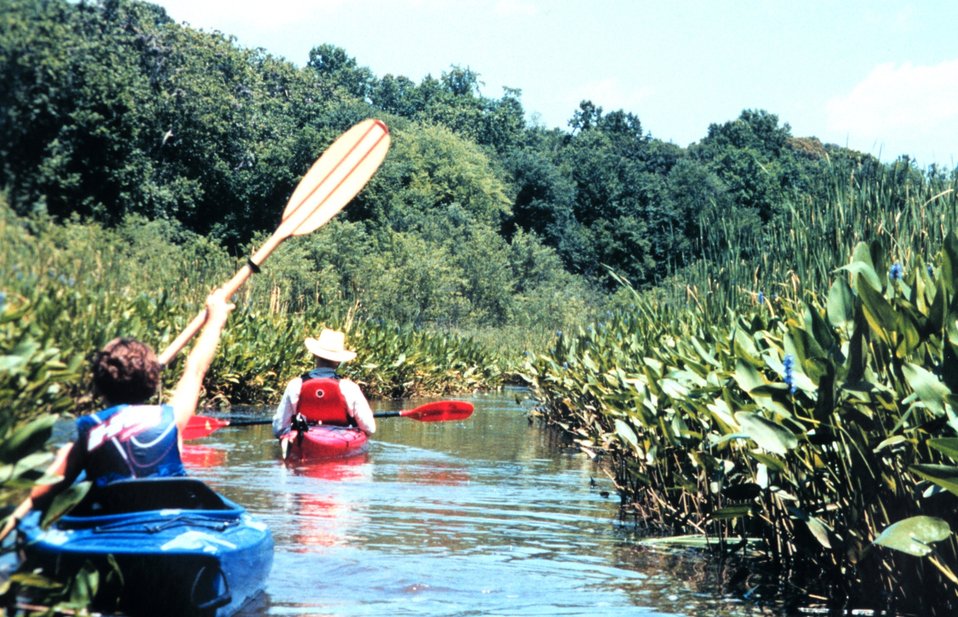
National Oceanographic Data Center employees up a creek - kayaking along the Patuxent River.